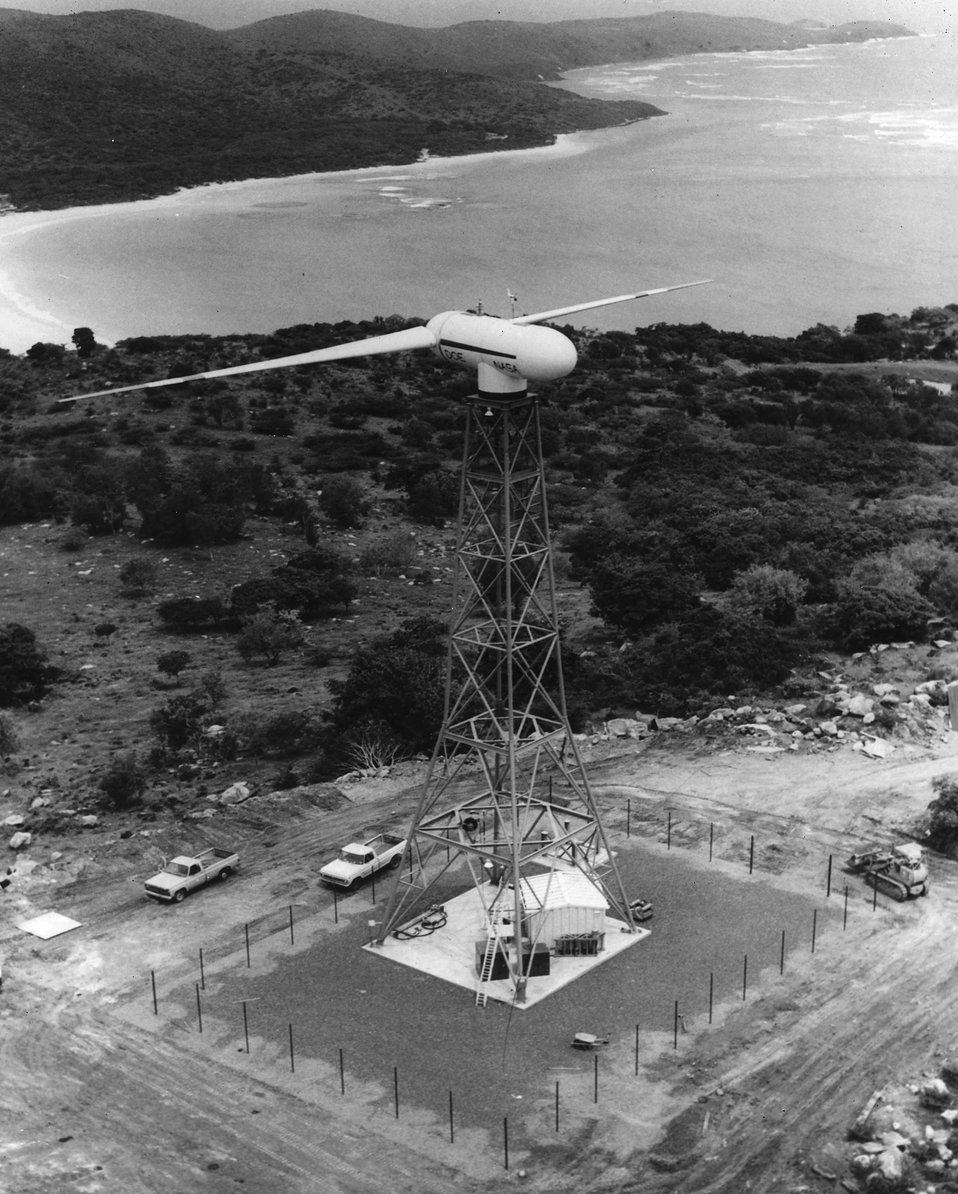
A large modern wind turbine generator is being field tested on Culebera Island, Puerto Rico for the Department of Energy and the National Aeronautics and Space Administration. c. 1978